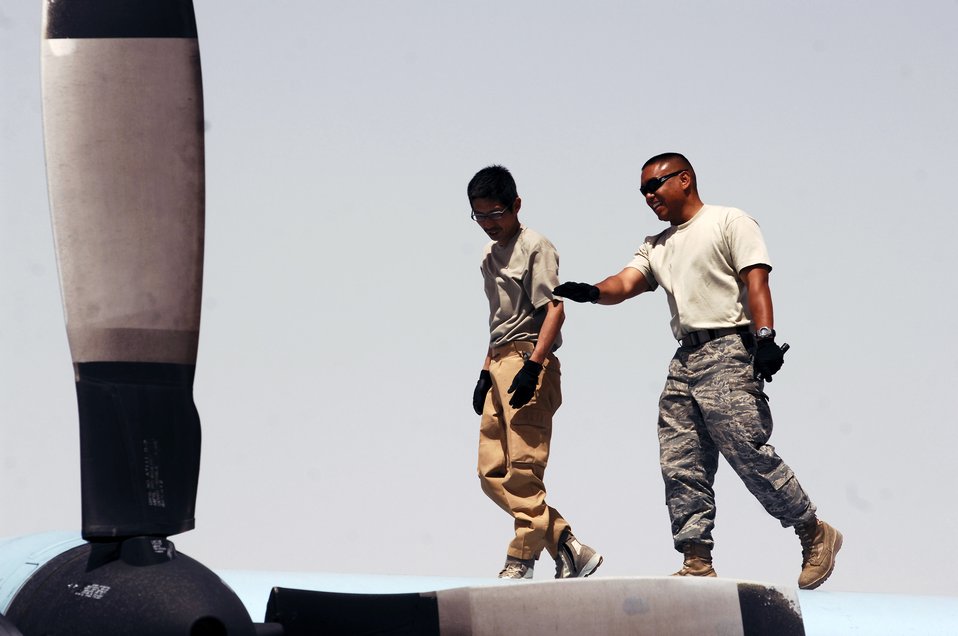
Coalition maintainers keep C-130 in the fight

Japanese Tech. Sgt. Hidetoshi Takeuchi (left) and Staff Sgt. Ray Pontemayor walk across the wing of Japanese Air Self-Defense Force C-130 Hercules March 21 at a Southwest Asian air base. Airmen from the U.S., Japanese Air Self-Defense Force and South Korean air force's 58th Airlift Wing participated in a coalition maintenance exchange program allowing maintainers to sharpen their skills, exchange ideas, and promote closer relations among coalition air forces supporting the war on terrorism. Sergeant Takeuchi is a maintainer from the Japan Air Self-Defense Force Iraq Reconstruction Support Airlift Wing, and Sergeant Pontemayor is a maintainer deployed to the 386th Expeditionary Aircraft Maintenance Squadron.